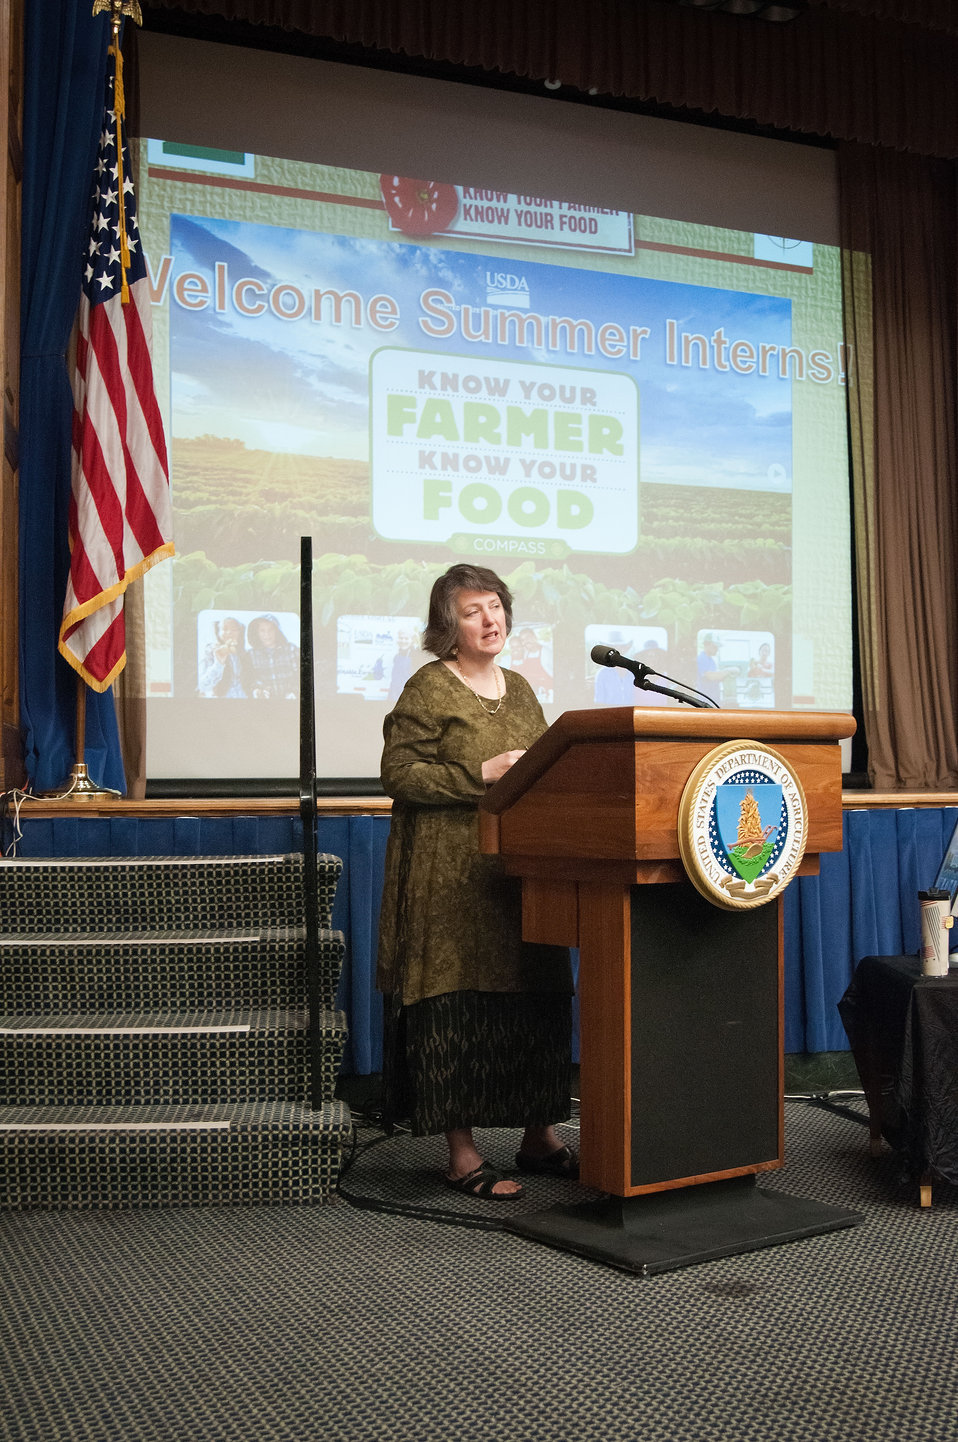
Agriculture Deputy Secretary Dr. Kathleen Merrigan explains the Know Your Farmer Know Your Food (KYF2) Compass to U.S. Department of Agriculture (USDA) interns in Washington, D.C. on Thursday, July 26, 2012. KYF2 is a USDA wide interagency initiative to promote and identify ways to improve the administration and implementation of programs and supports farms and businesses involved in regional food networks to strengthen the connection between farmers and consumers, including improving rural economies, promoting job growth and increasing access to healthy food in America. Food hubs impact regional food systems and the resources available to support their growth and development.